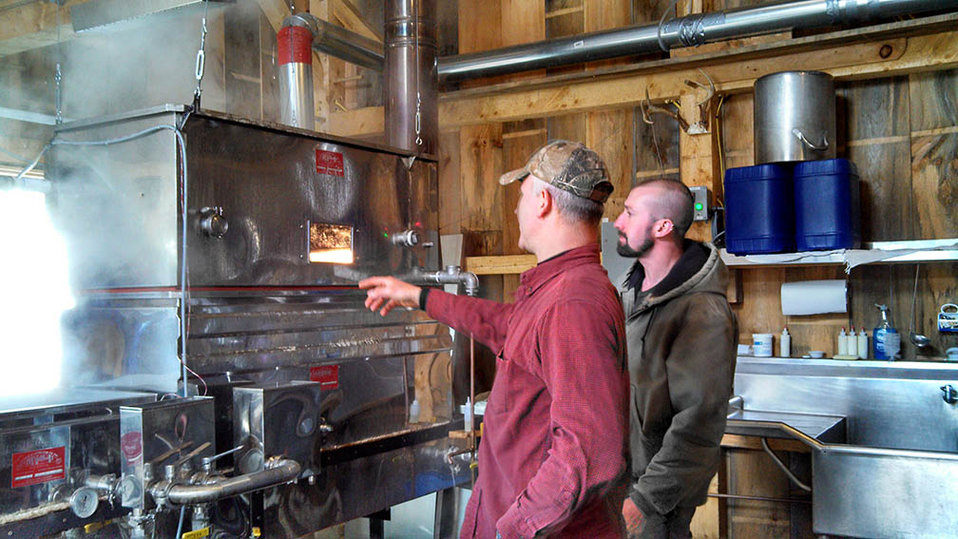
Maple 3

U.S. Department of Agriculture (USDA) Natural Resource Conservation Service (NRCS) District Conservationist Ray Covino (right) talks with a maple sugar producer about how more efficient machinery helps both the producer and the environment.